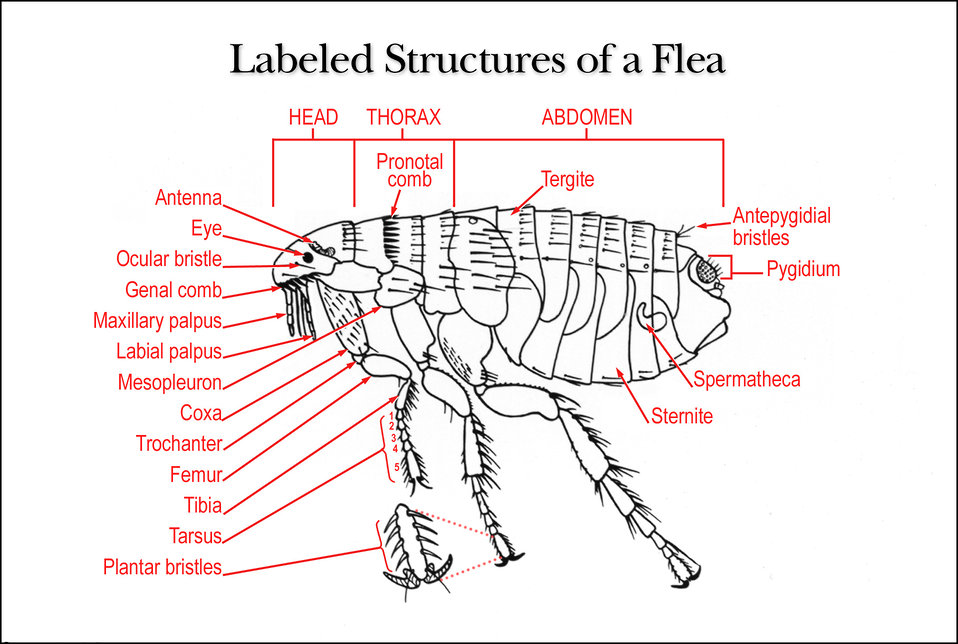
This illustration shows the identifying morphologic structures of an adult female flea.